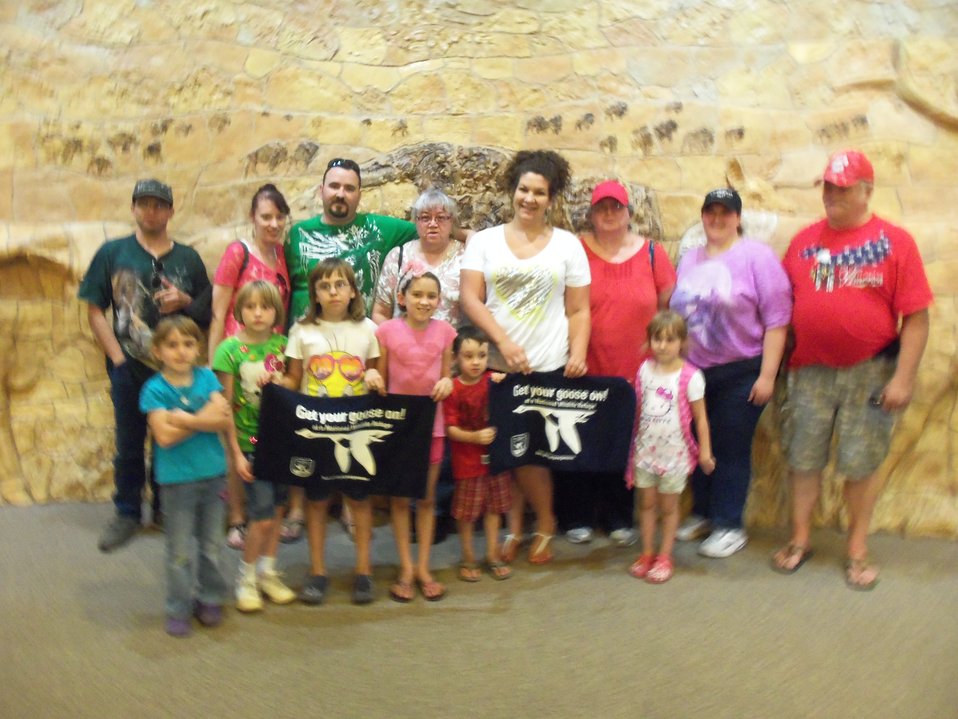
Get Your Goose On!

Wichita Mountains National Wildlife Refuge in Oklahoma.